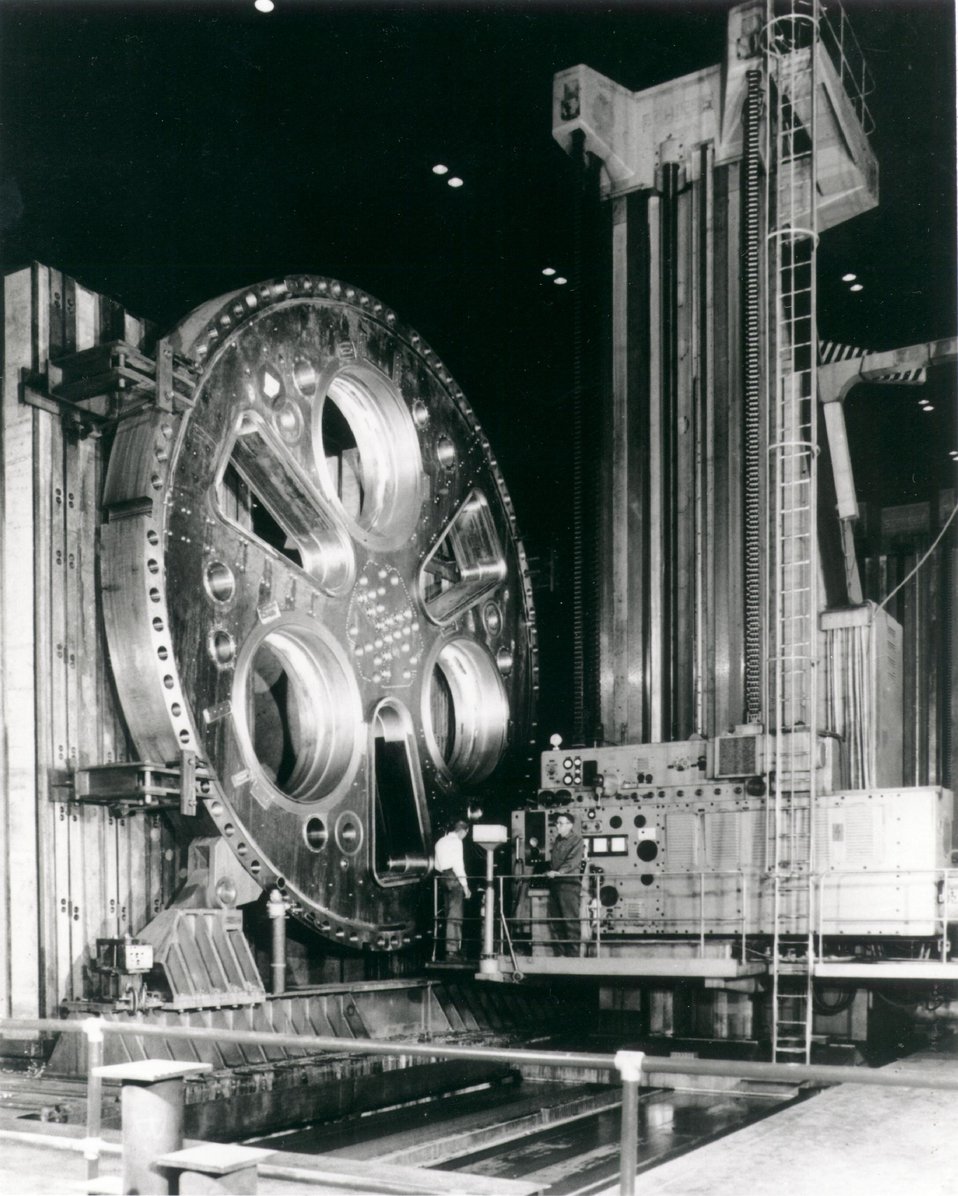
The reactor vessel head for the Energy Research and Development Administration's Fast Flux Test Facility (FFTF) at Hanford, Washington. c. 1974.